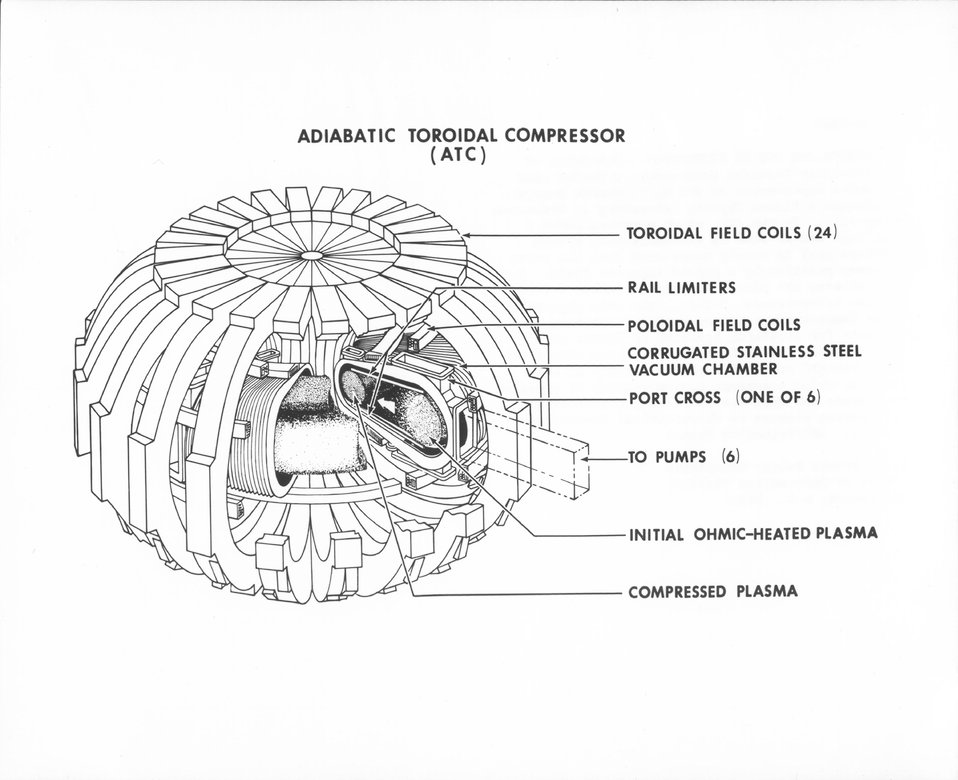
Schematic of the Adiabatic Toroidal Compressor, a device used in fusion experiments at the U.S. Atomic Energy Commission's Plasma Physics Laboratory at Princeton University. c. 1972